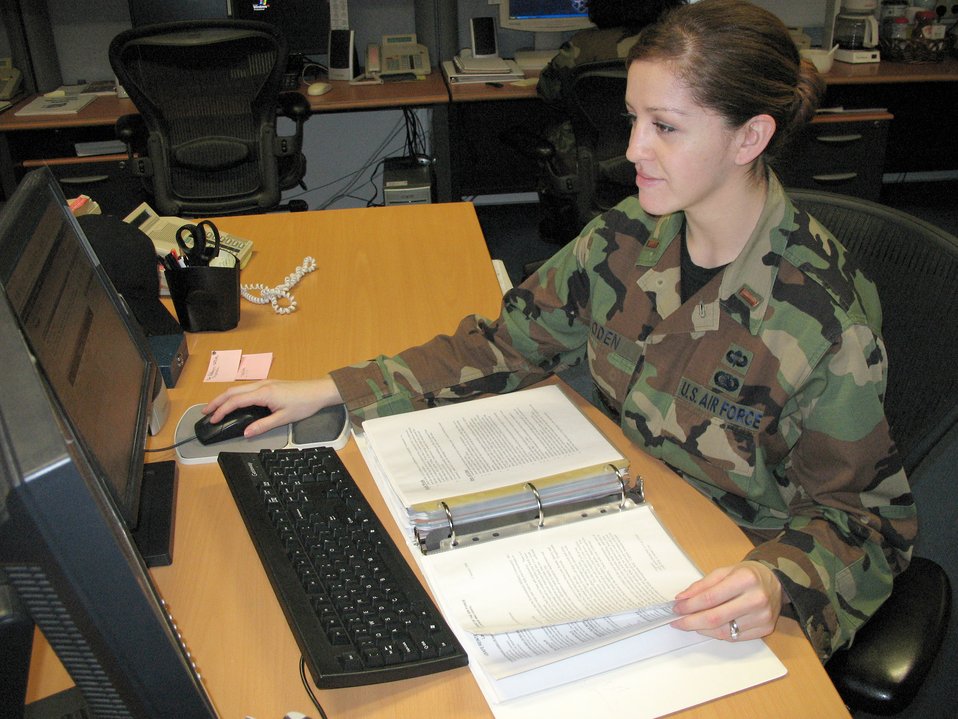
Program helps Airmen reintegrate after deployments

2nd Lt. Gwendolyn Soden works on the reintegration sharepoint Web site Feb. 9 at Ramstein Air Base, Germany. The site has answers to questions about the reintegration program and includes U.S. Air Forces in Europe policies, the process for the reintegration line and checklists.